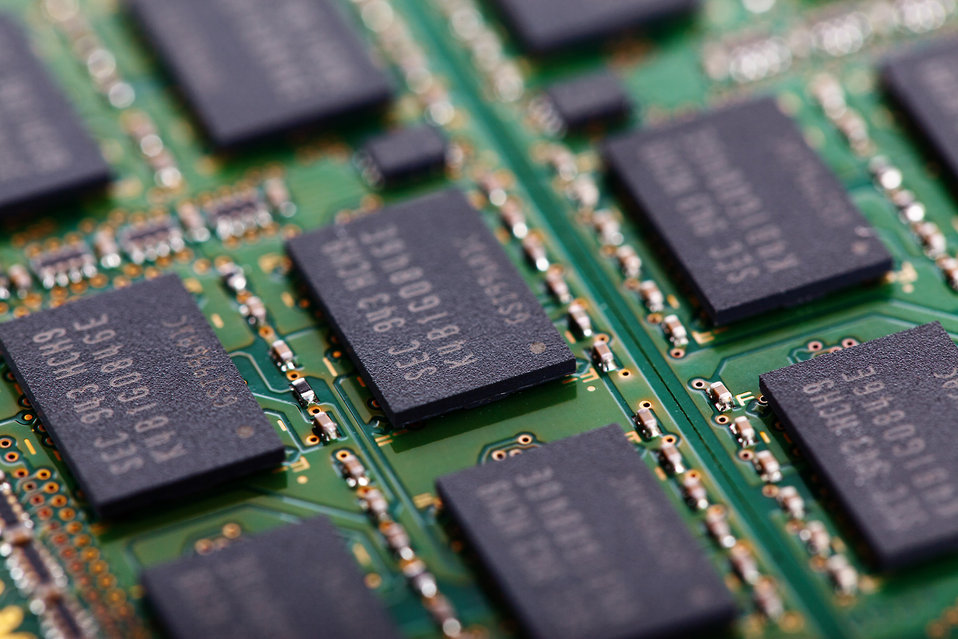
Computer memory chips

Computer ram memory chips.